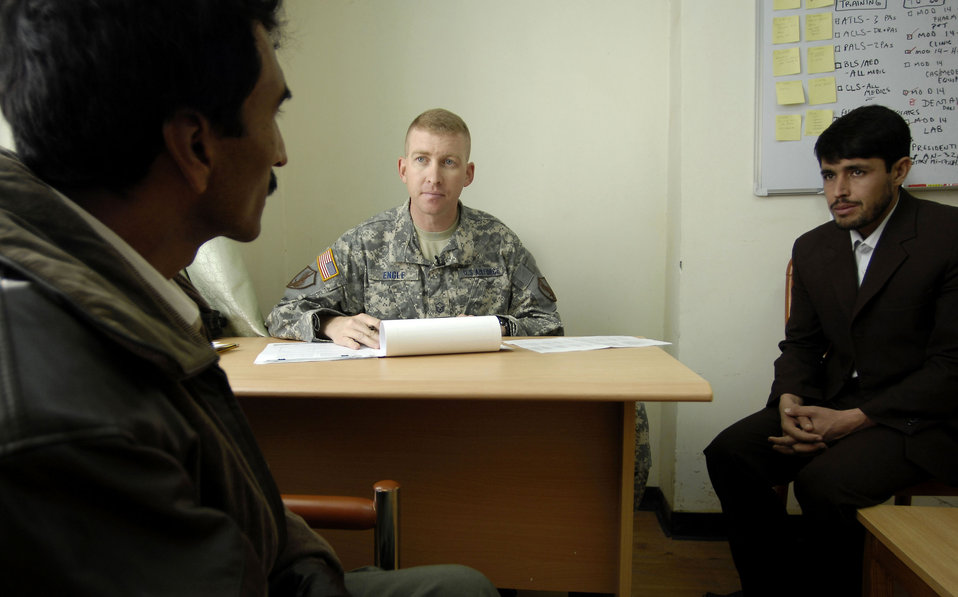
Airmen help Afghans stand up flight medicine clinic

Master Sgt. Brian Engle interviews and records the medical history of a potential Afghan national army air corps aircrew member with the help of an interpreter Oct. 17 in Kabul, Afghanistan. The information is part of a flight physical, and will help determine if this candidate is eligible to fly with the Air Corps. Sergeant Engle, part of the air corp advisers group, is deployed to Kabul International Airport from Hurlburt Field, Fla.